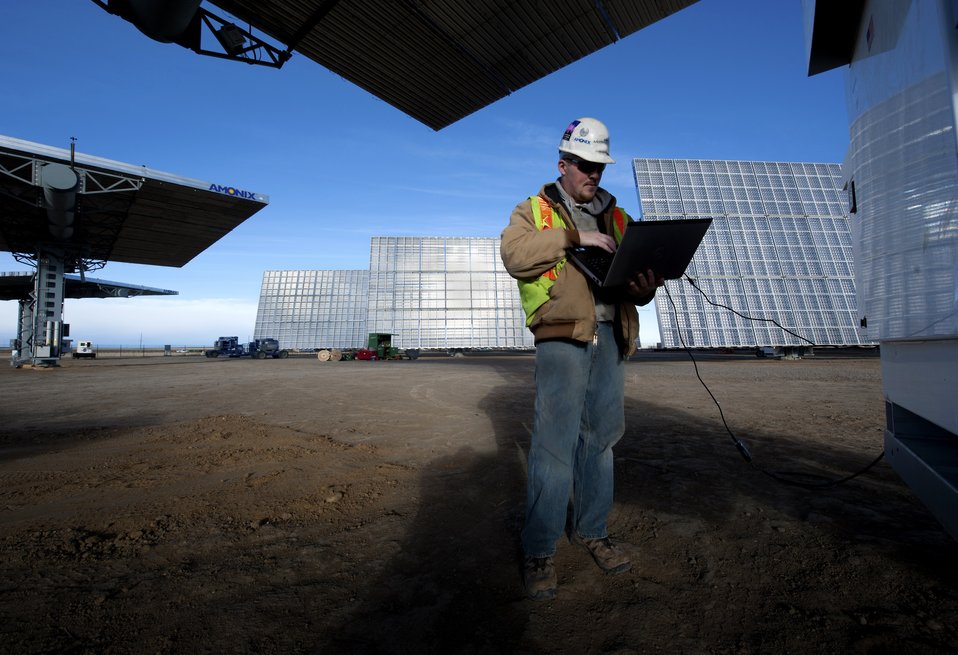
A technician at SolarTac in Aurora, CO, enters some numbers into a laptop as he monitors validation of the Amonix 7700 solar power generators.

Amonix and National Renewable Energy Laboratory (NREL) are testing a concentrating photovoltaic array at SolarTac in Aurora, Colorado. The Amonix 7700 Solar Power Generator was developed in a partnership between NREL and Amonix. It is a highly concentrated, highly efficient bulk power generator that produces 40 percent more energy than conventional fixed photovoltaic panels.